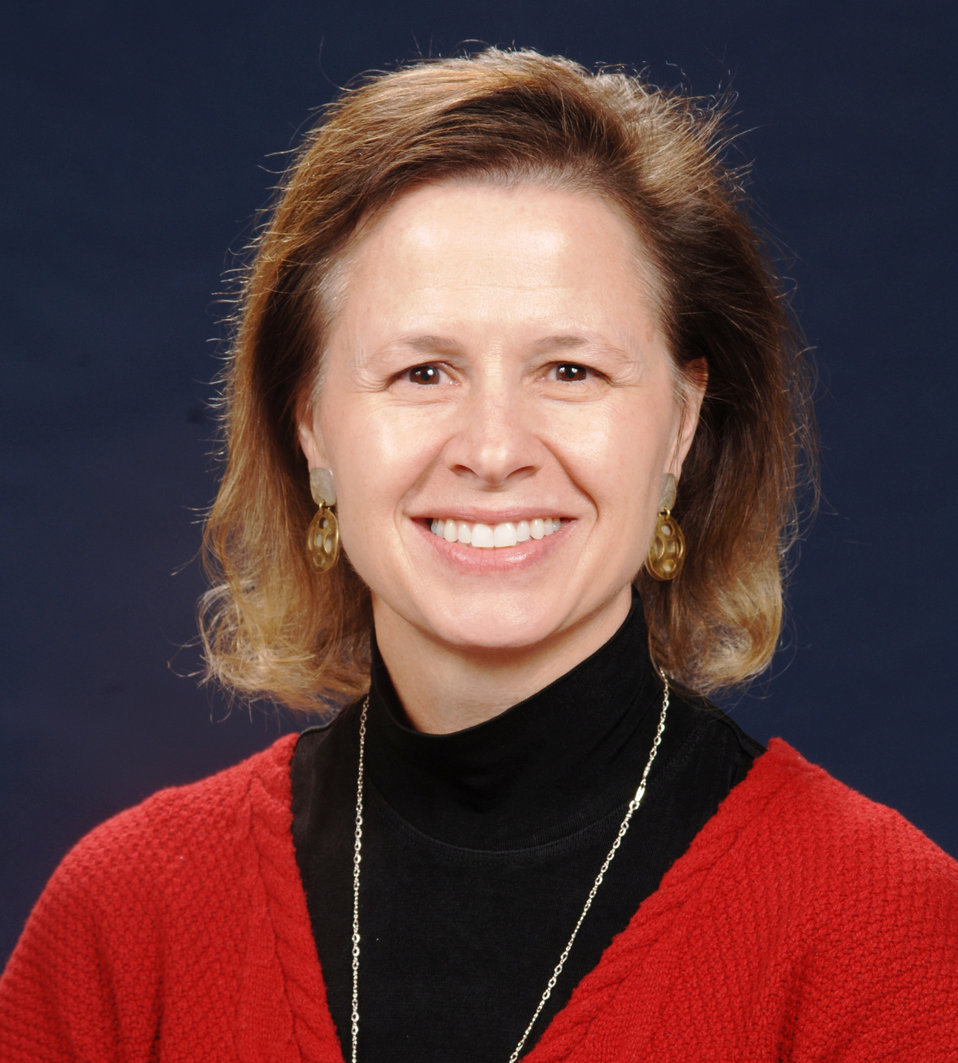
Dr. Laurie E. Locascio